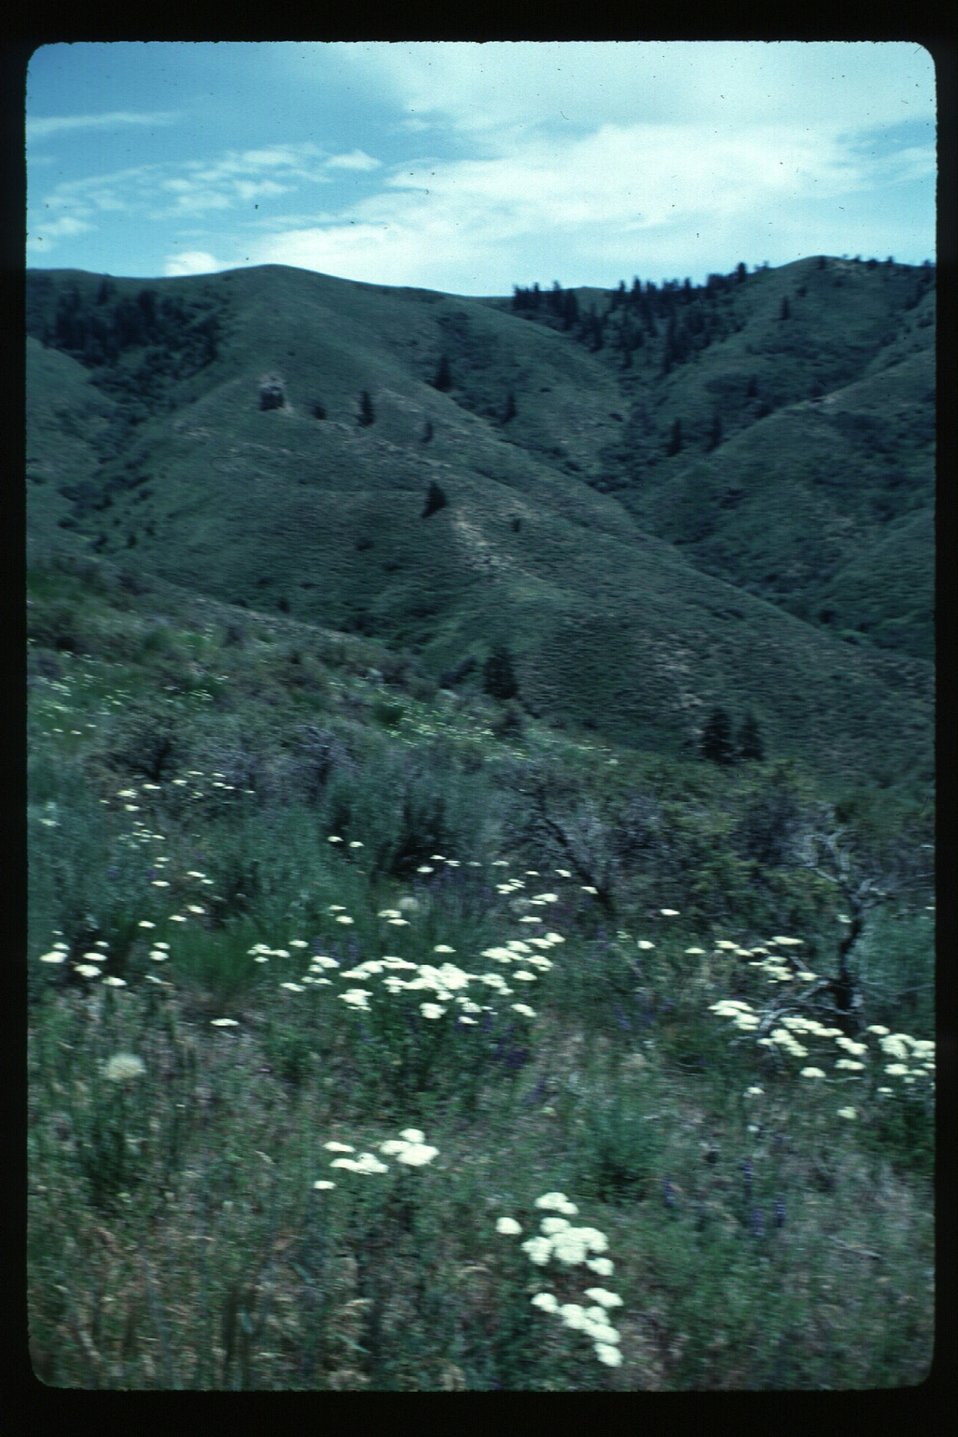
Boise Foothills Boise Front Four Rivers Field Office LSRD Lower Snake River District